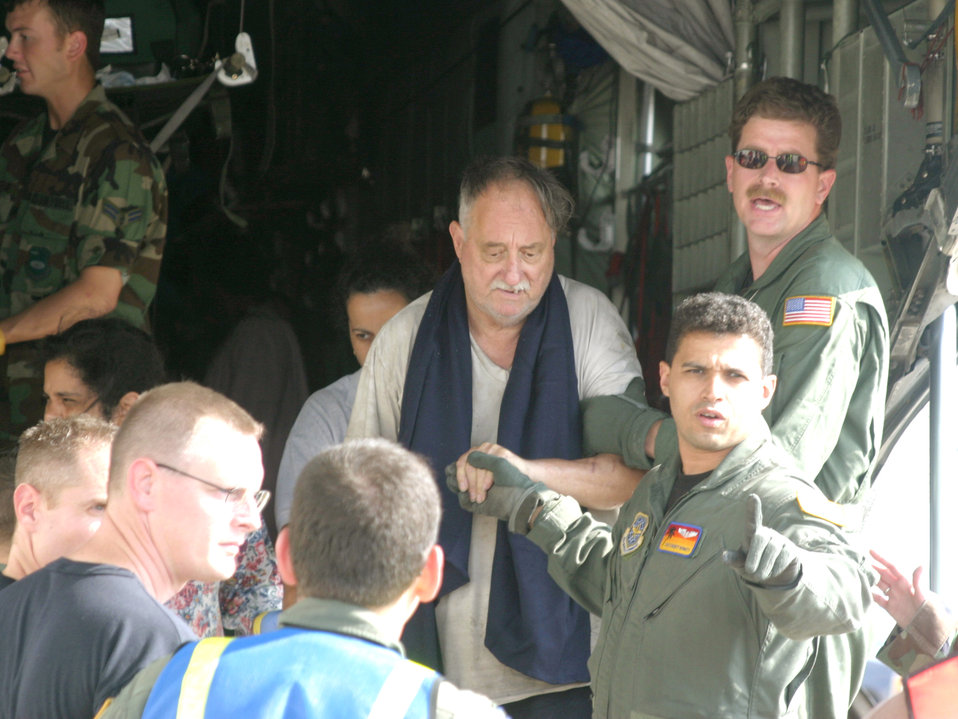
Hurricane relief mission

LACKLAND AIR FORCE BASE, Texas -- Airmen with the 452nd Aeromedical Evacuation Squadron from March Air Reserve Base, Calif., escort evacuees from a C-130 Hercules on Sept. 3. C-130 crews from the 50th Airlift Squadron at Little Rock teamed up with the 452nd AES to relocate sick and injured patients devastated after Hurricane Katrina.